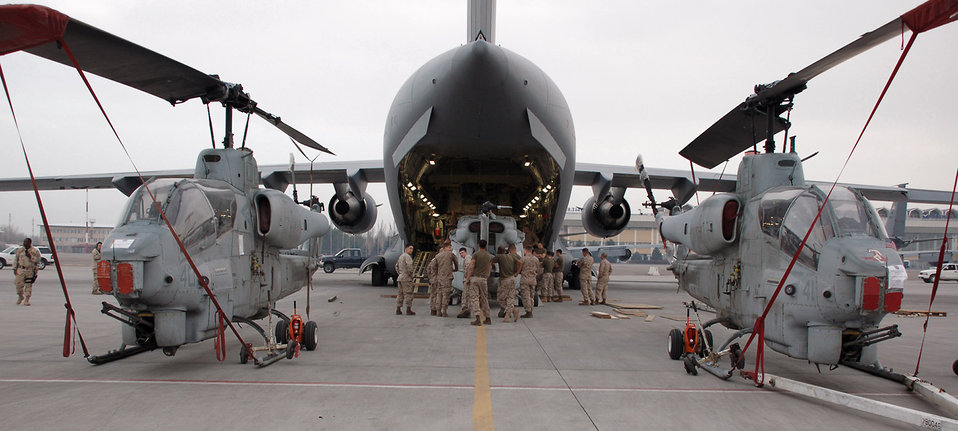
Marines move through Manas Air Base

Marines with the 24th Marine Expeditionary Unit load three AH-1W Super Cobra helicopters onto an Air Force C-17 Globemaster III March 16 at Manas Air Base, Kyrgyzstan. The Marines are headed downrange to Afghanistan as part of the troop plus-up authorized by the president in January. The Marines will be a part of the NATO-International Security Assistance Force, conducting operations to extend the authority of the Government of the Islamic Republic of Afghanistan.